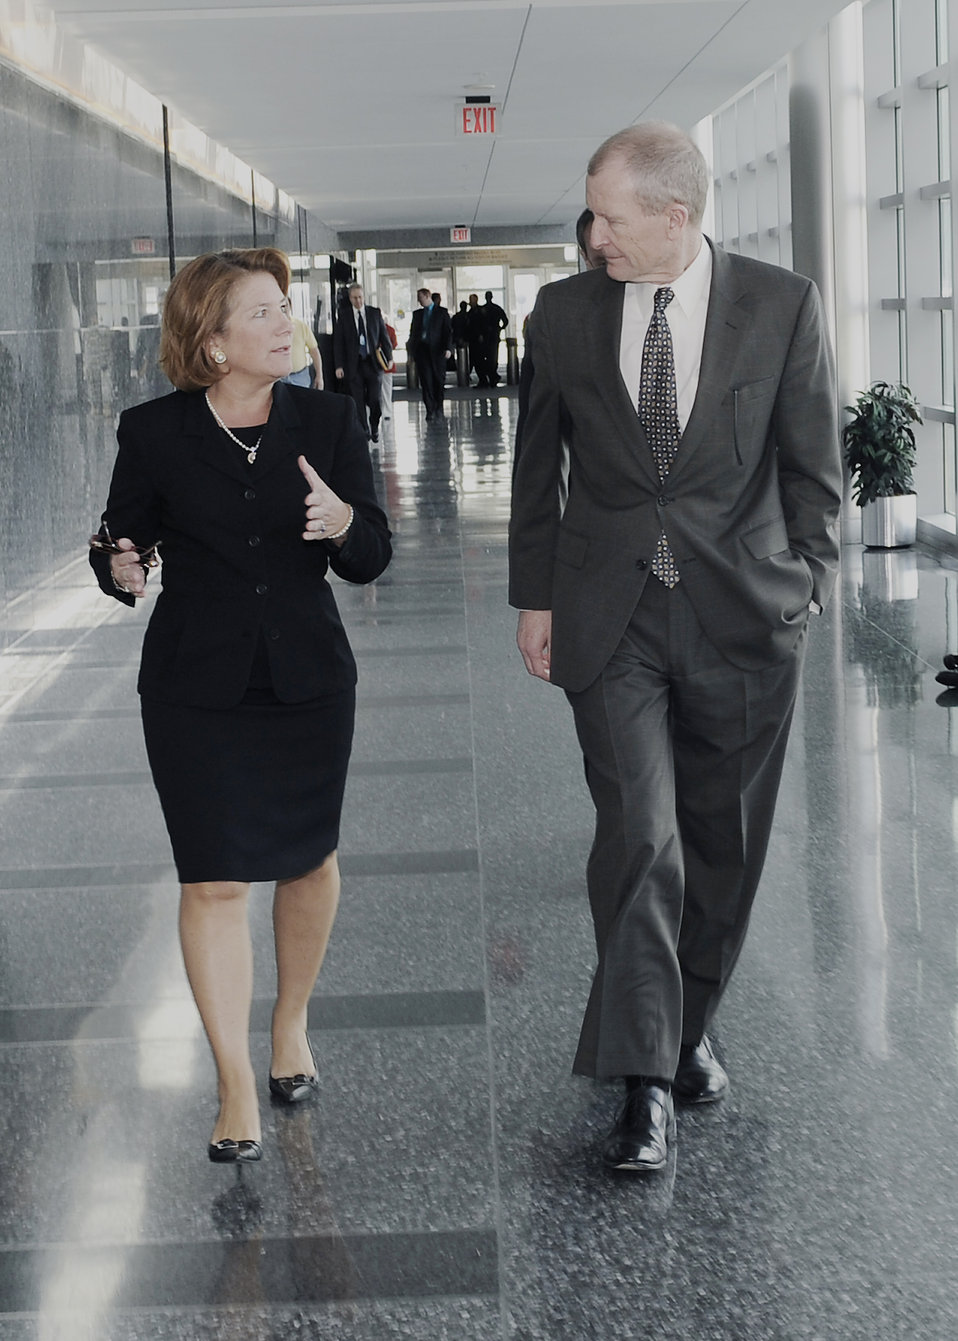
Women's History Month

Letitia Long, deputy director of the Defense Intelligence Agency, talks with Director of National Intelligence Dennis C. Blair. Ms. Long has been chosen to be director of the National Geospatial-Intelligence Agency.